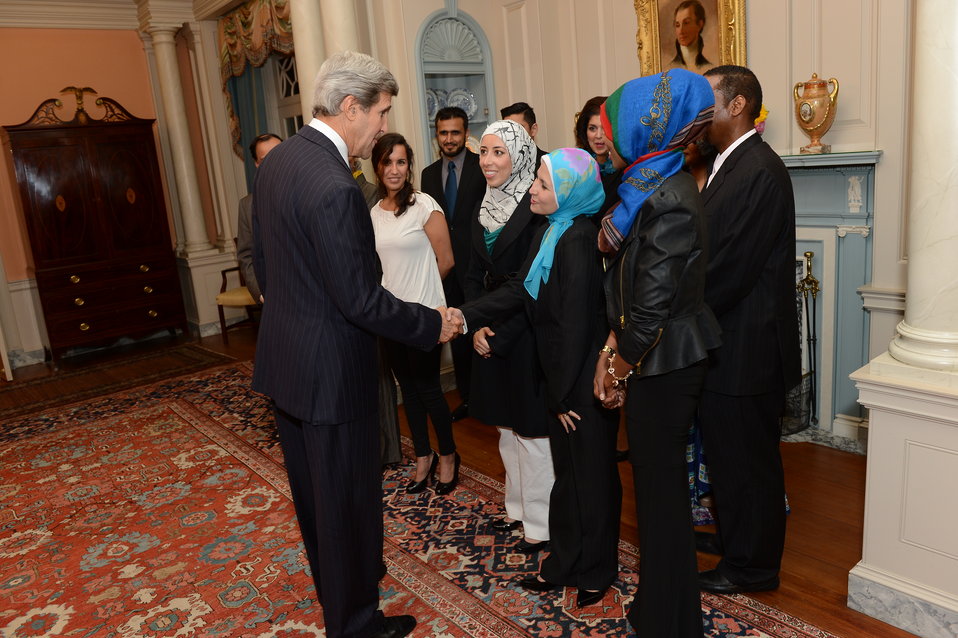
Secretary Kerry Meets With Invited Guests

U.S. Secretary of State John Kerry meets with guests invited to his Iftar to commemorate the month of Ramadan at the U.S. Department of State in Washington, D.C., on July 24, 2013.